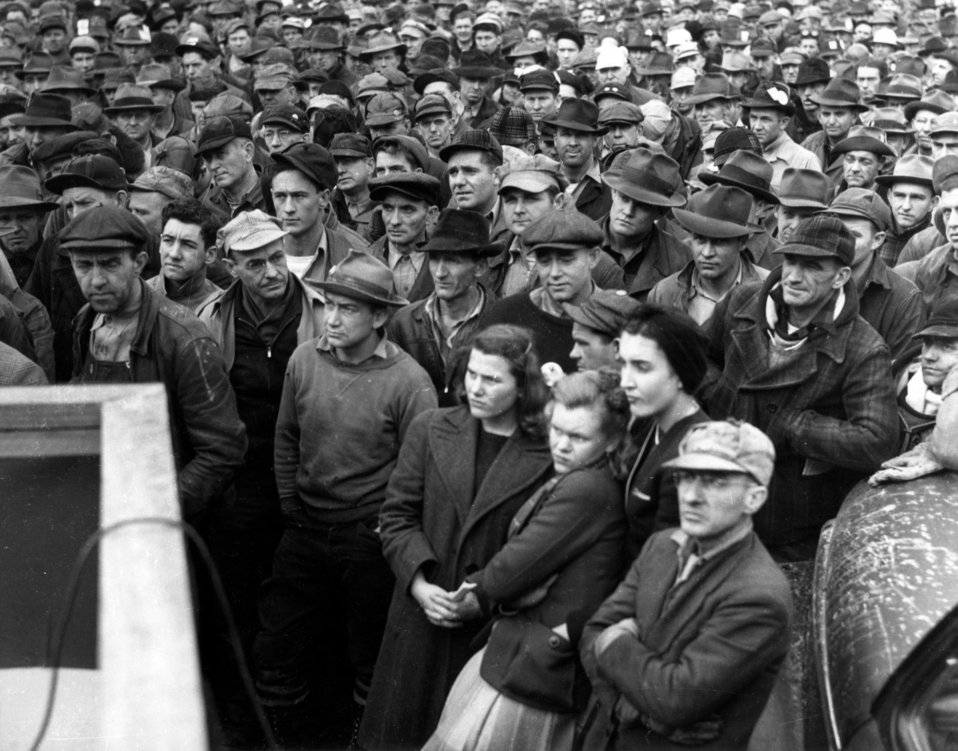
Daily Life at Oak Ridge